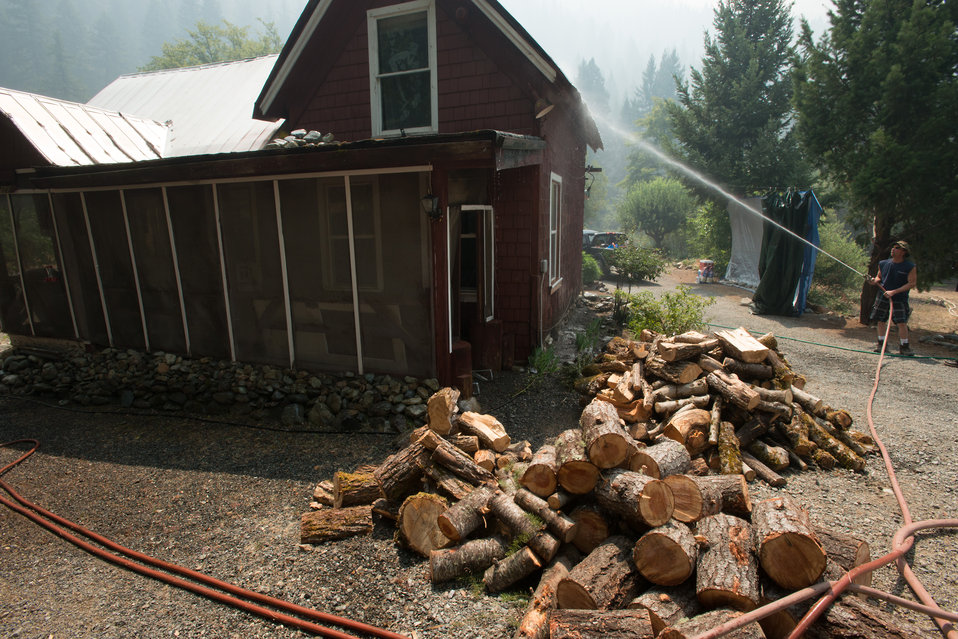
Dale Cramer’s home in Sawyers Bar, CA gets soaked with water in preparation for the possible approach of flames from the Salmon River Complex Fire, in the Klamath National Forest, Tuesday, Aug. 6, 2013. Wildland/structural firefighters went through the town, assessing fire prevention needs and talking with resident about fire prevention measures they are doing on their own as well as other measures they could take to prepare for fire. Actions such as moving away firewood, cutting and clearing plants next to their structures, and using garden hoses to soak structures and grounds all help in the event the main fire comes into their town.
There are two types structure environments in the realm of wildland firefighting.
This urban intermix structural protection environment is generally the more challenging, where structures have been built within a wildland area, isolated to some degree from other structures, but with no separation from wildland fuels (trees, brush and grass). This requires each structure to be assessed on a case-by-case basis. Fire protection measures will be tailored to each situation; defending these structures require a more complex solution, more firefighters, equipment and resources per structure.